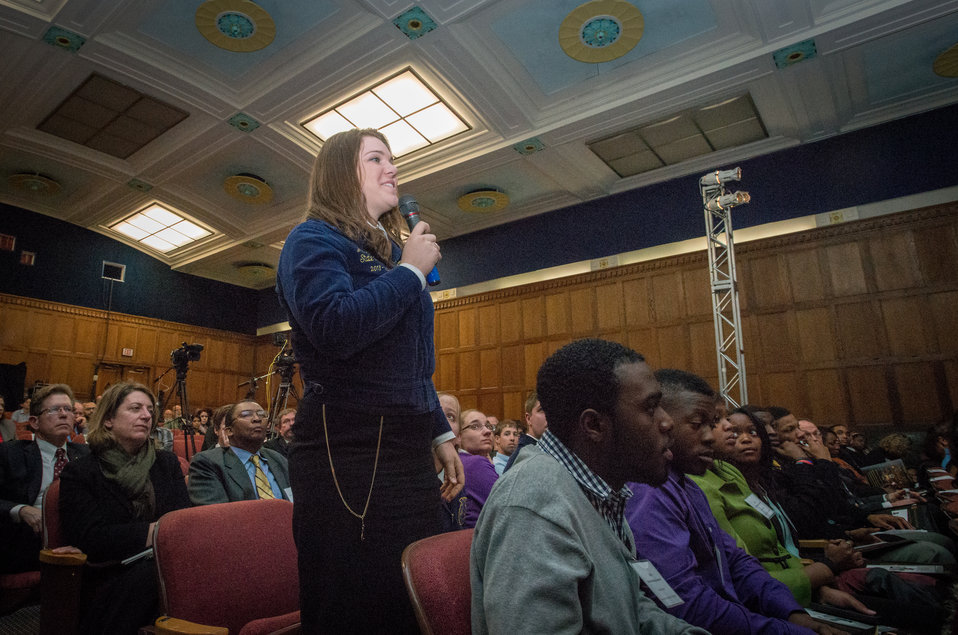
A student poses a question to the discussion panels at he Borlaug Symposium commemorating the late Dr. Norman Borlaug's 100th Birthday and vision, held in the Jefferson Auditorium of the U.S. Department of Agriculture (USDA) in Washington, D.C. on Tuesday, Mar. 25, 2014. The symposium highlights current efforts addressing global hunger. The symposium panels will feature high school and university students, as well as, scientists and policy advisors at Monsanto Chief Technology Officer Robb Farley talks about mobile communication and it's relationship to agriculture, at the Borlaug Symposium commemorating the late Dr. Norman E. Borlaug's 100th Birthday hosted by the U.S. Department of Agriculture (USDA) in the Jefferson Auditorium of USDA in Washington, D.C. on Tuesday, Mar. 25, 2014. The symposium will highlight current efforts addressing global hunger. The symposium panels will feature high school and university students, as well as, scientists and policy advisors at U.S. Agency for International Development (USAID), USDA and Non-Governmental Organizations (NGO). The symposium was planned in partnership with: U.S. Agency for International Development (USAID), Cornell University, Iowa State University, University of Minnesota, The Norman Borlaug Institute for International Agriculture, Texas A and M University, and the World Food Prize.